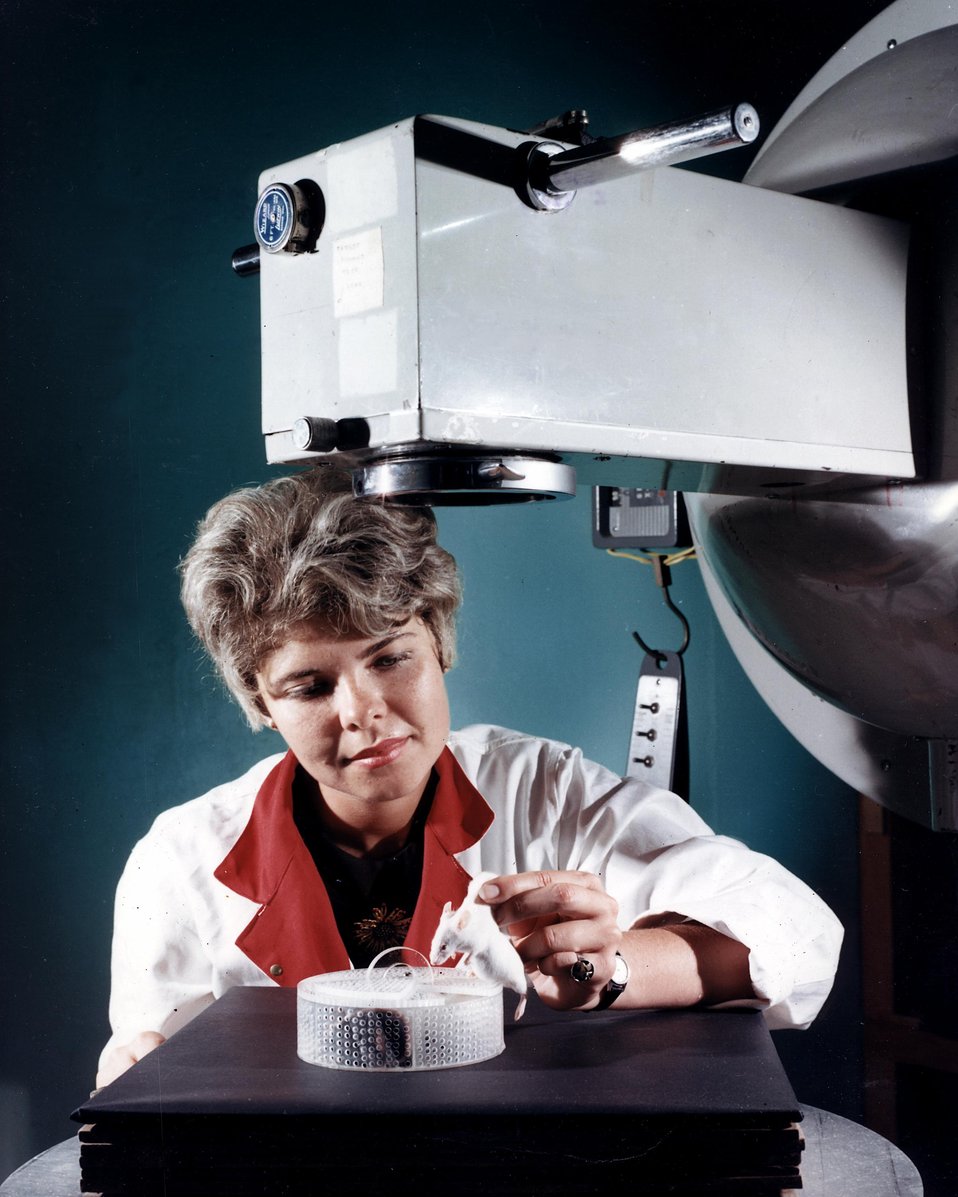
A technician places a mouse in a chamber predatory to x-irradiation. Part of the x-ray machine is also shown. These studies concern the acceleration of aging which occurs in animals as a result of a dose of radiation. c. 1966